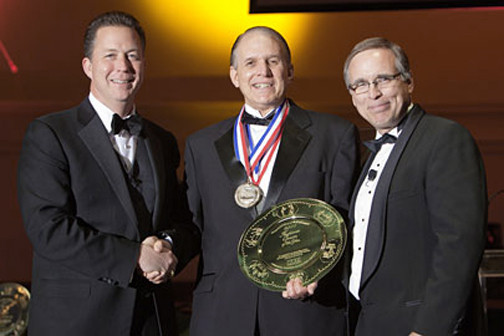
IMFA winner

George Miller, the Air Force Services Agency food and beverage operations chief, is presented the 2011 International Foodservice Manufacturers Association's Gold Plate Award May 23, 2011, by Michael Hickey (left), the ECOLAB Corp. executive vice president, and Larry Oberkell, the IMFA president and CEO. Mr. Miller is the first DOD member to win the award that annually recognizes the best foodservice operator worldwide. The award was presented during the National Restaurant Association and Air Force Hennessy Awards held in Chicago May 20 through 24.